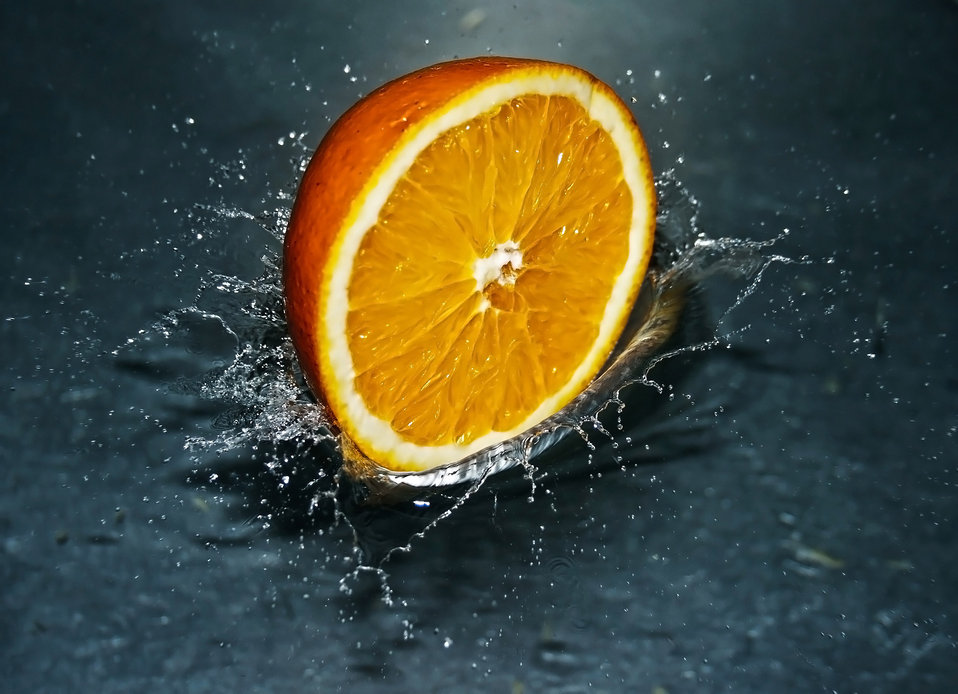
Splash #1

A half of orange falling into water bowl.